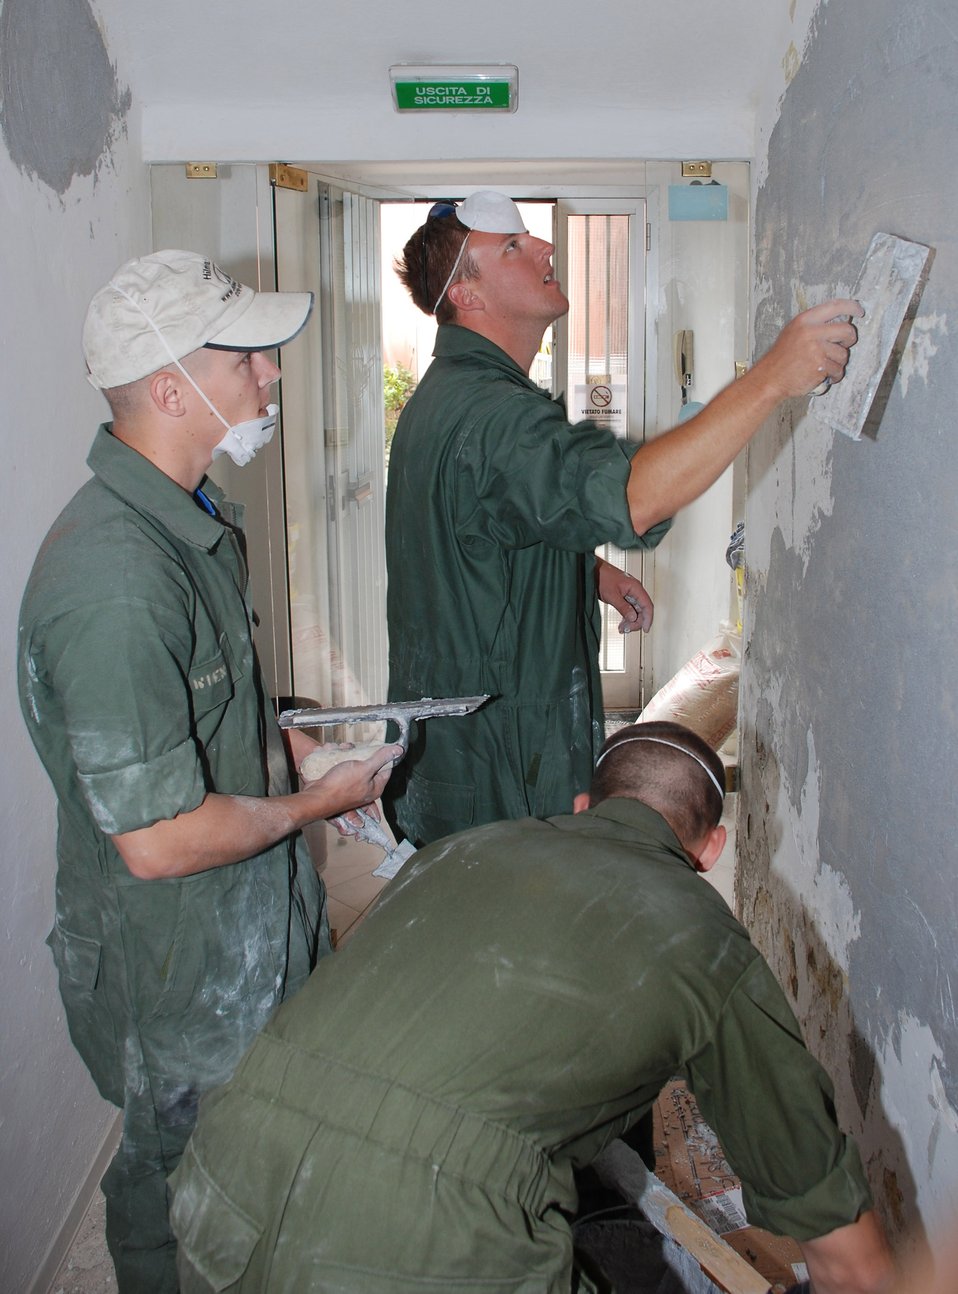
Camp Darby Airmen help Italian veterans

Airmen replaster a wall during a volunteer effort to refurbish an Italian veterans hall in Livorno, Italy. The Airmen are with the 31st Munitions Squadron at nearby Camp Darby.